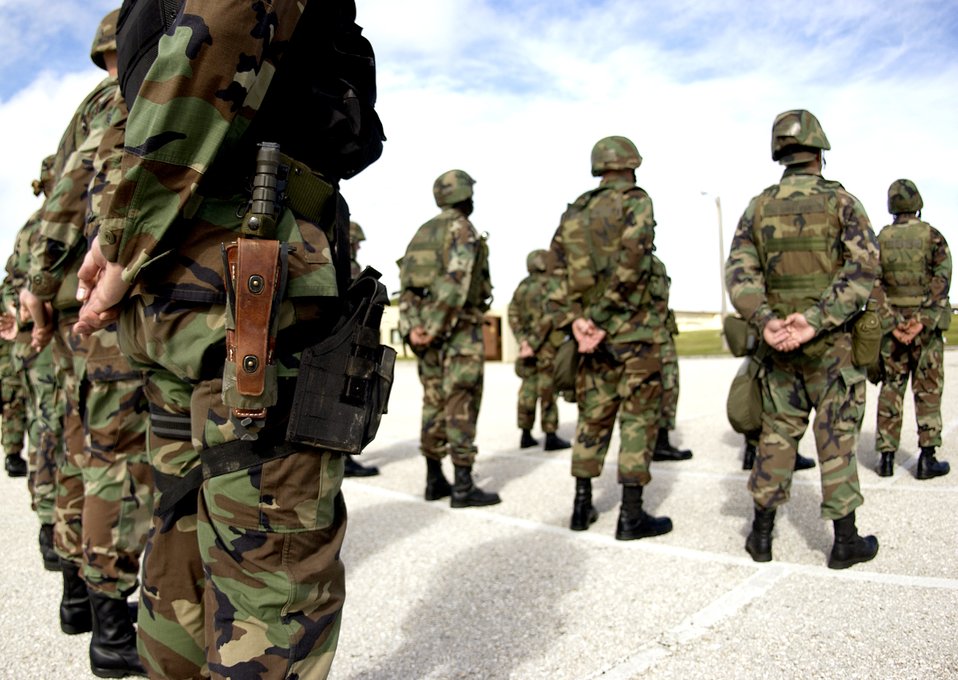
Deployment check

ANDERSEN AIR FORCE BASE, Guam (AFPN) - Airmen with the 36th Civil Engineer Squadron stand in formation during an open ranks inspection. The squadron holds regular inspections to ensure that troops have all of their necessary equipment for deployment.